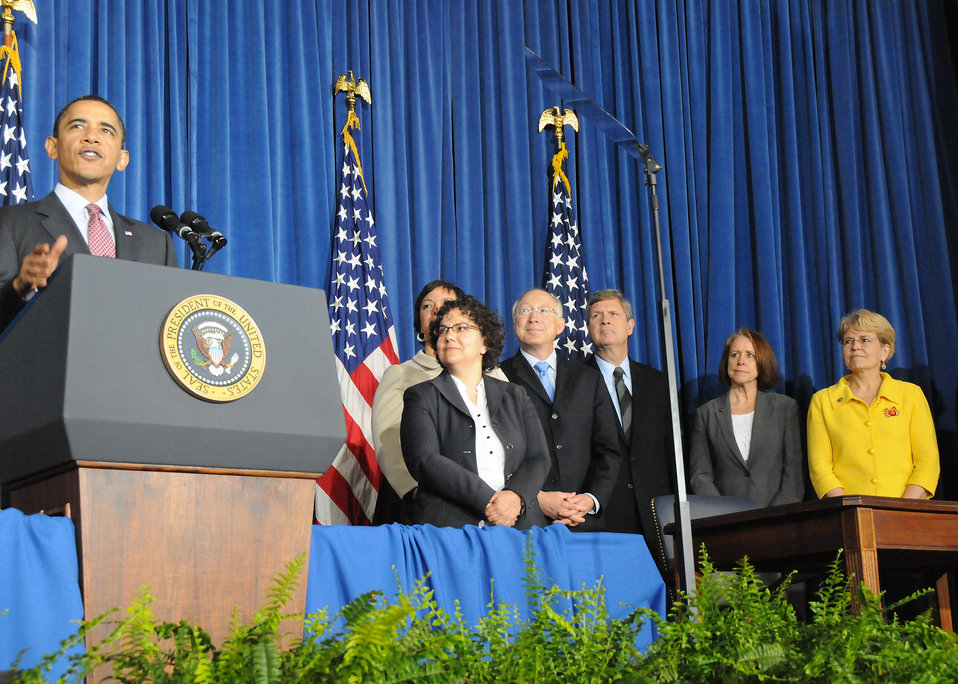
Listening to President Barack Obama's remarks are (L to R) Council on Environmental Quality Chair Nancy Sutley, Environmental Protection Agency Lisa Jackson (standing behind Ms. Sutley) , Interior Secretary Ken Salazar, Agriculture Secretary Tom Vilsack, Assistant Secretary of the Army for Civil Works Jo-Ellen Darcy, and National Oceanic and Atmospheric Administrator Dr. Jane Lubchenco. The event took place at the Department of Interior in Washington, D. C. on April 16, 2010. USDA photo 10di1316-175